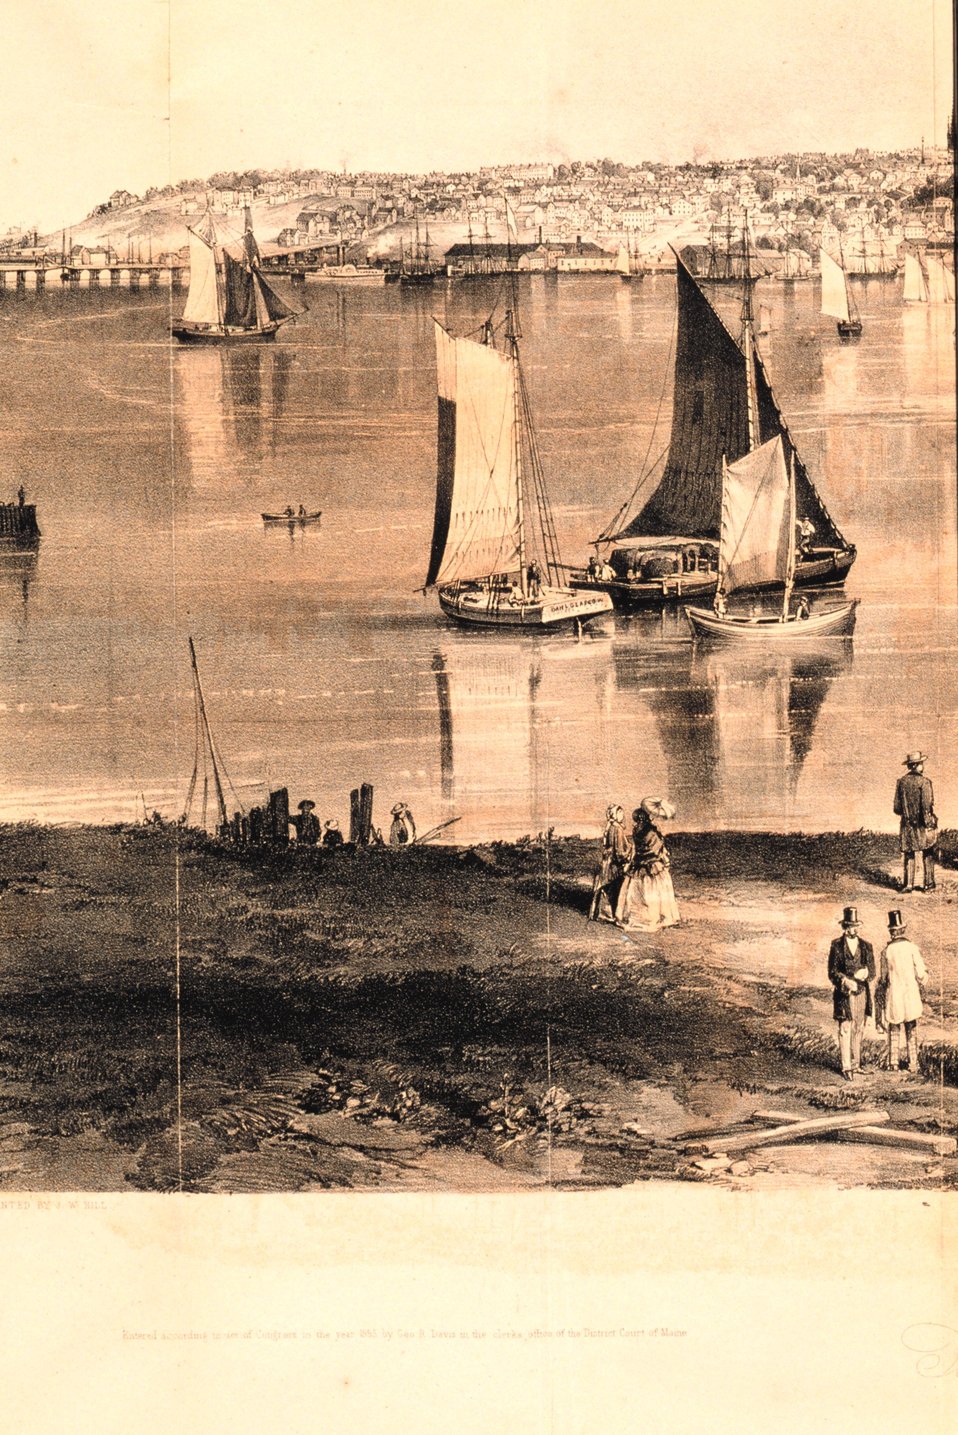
Left quarter detail of engraving of Portland Harbor